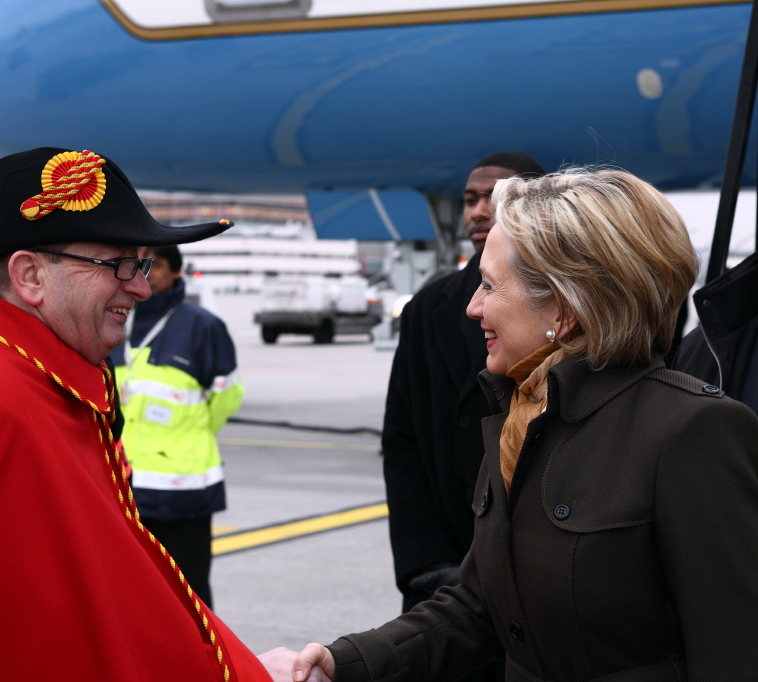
Arrival in Geneva, Switzerland

U.S. Secretary of State Hillary Rodham Clinton arrives in Geneva, Switzerland March 6, 2009.